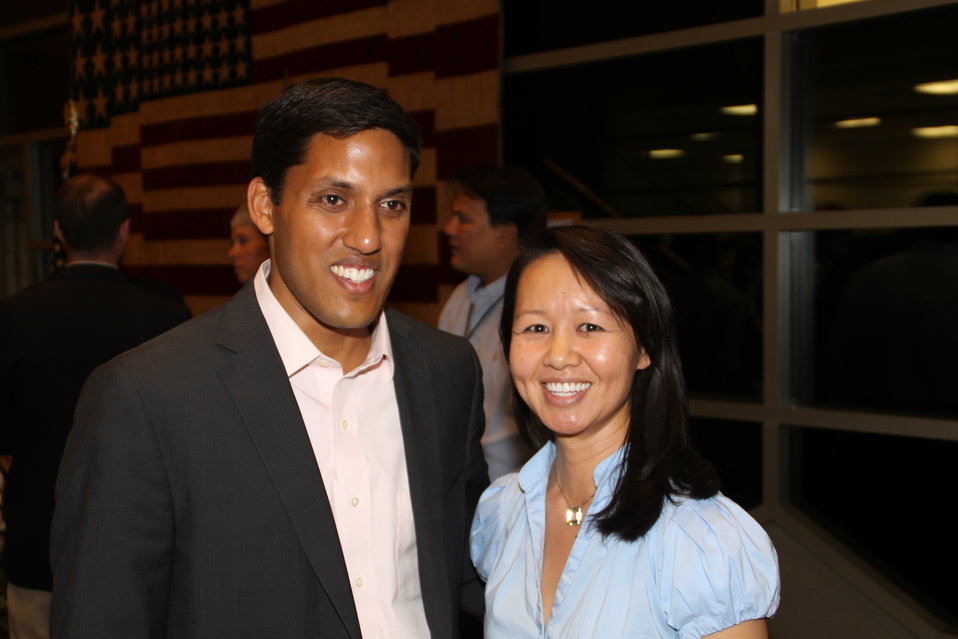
US Embassy Town Hall July 21, 2010